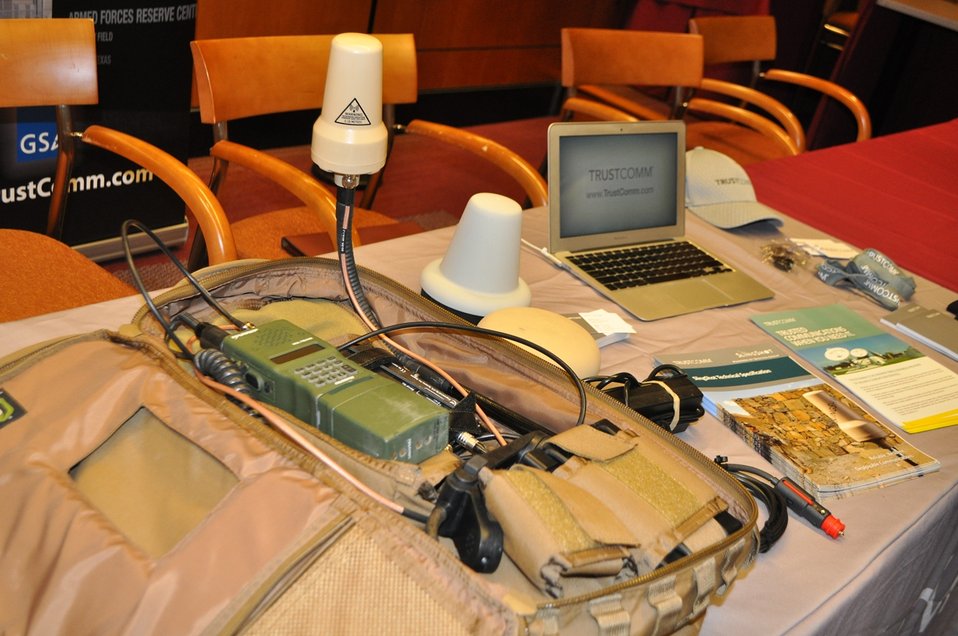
5.14.2014 Satellite Technology Demonstration

Satellite Technology Demonstration at FCC